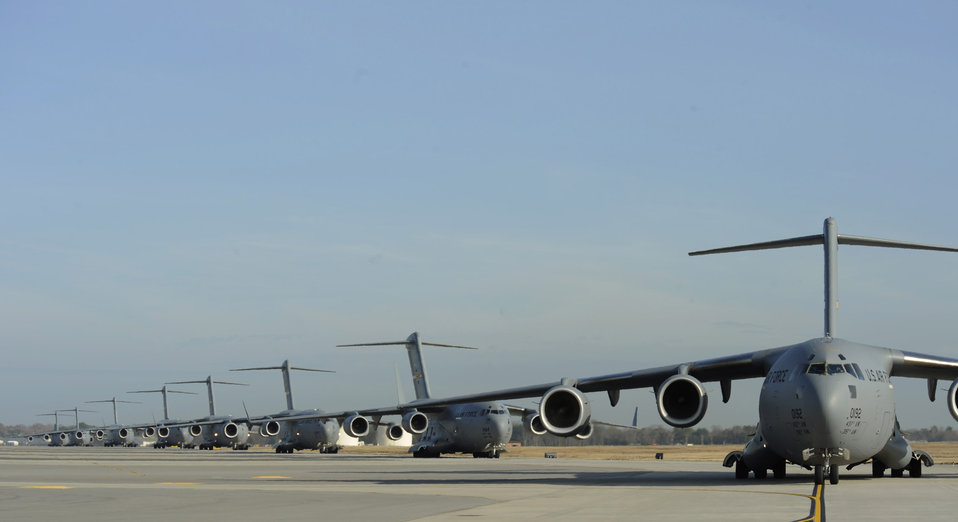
Show of force

Thirteen C-17 Globemaster IIIs from the 437th Airlift Wing prepare to take off on a large-formation exercise Dec. 18 at Charleston Air Force Base, S.C. The aim of the exercise is to maintain the ability of the Air Force to drop the equivalent of an Army brigade within 30 minutes.